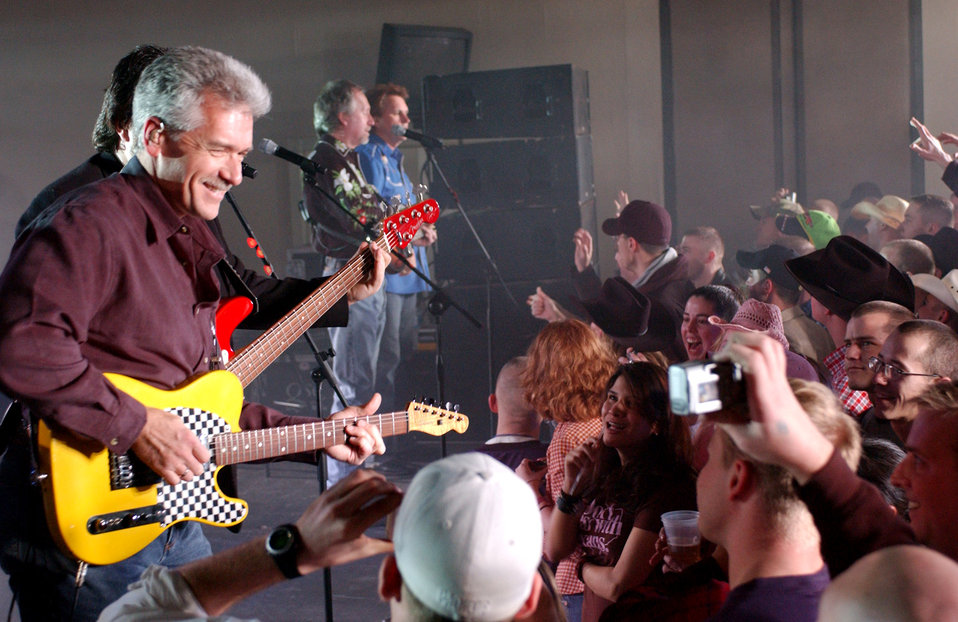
Diamond Rio in Korea

KUNSAN AIR BASE, South Korea (AFPN) -- (From left) Jimi Olander, Dana Williams, Gene Johnson and Marty Roe of country band Diamond Rio play for 8th Fighter Wing Airmen Feb. 15. Diamond Rio made their first stop here as they sweep through the Pacific playing for servicemembers. The tour is sponsored by the United Services Organization.